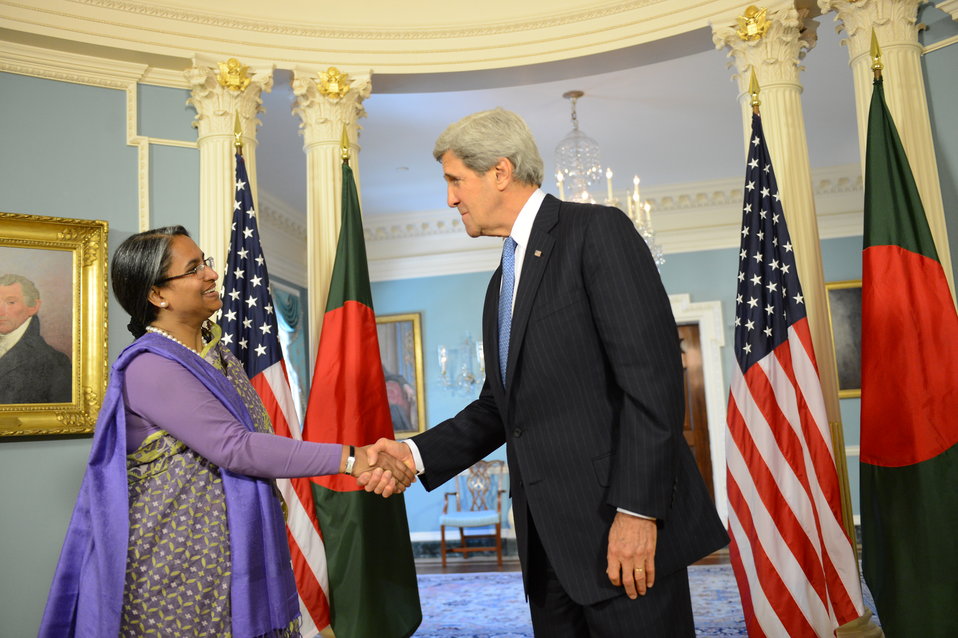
Secretary Kerry Meets With Bangladeshi Foreign Minister Moni

U.S. Secretary of State John Kerry meets with Bangladeshi Foreign Minister Dipu Moni at the U.S. Department of State in Washington, D.C., on May 17, 2013.